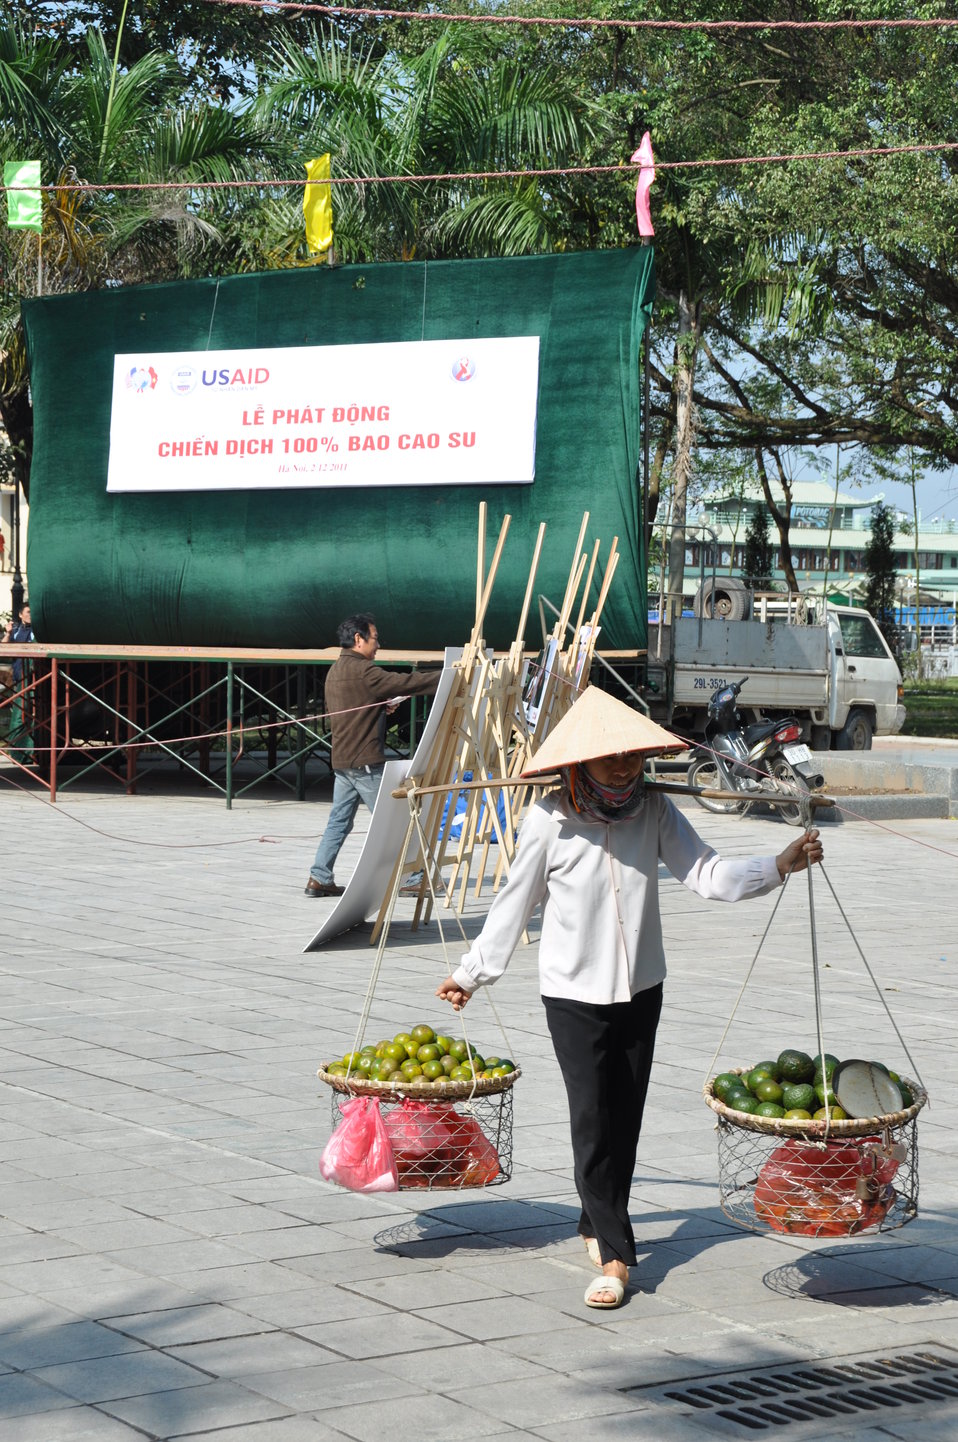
100% Condom Use Campaign Launch, Dec. 2, 2011